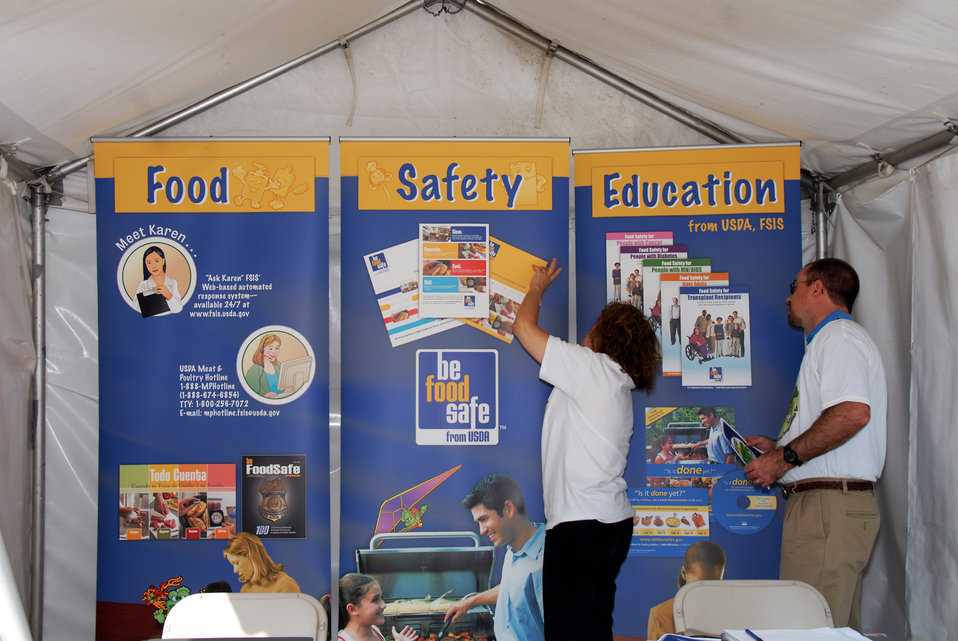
U.S. Department of Agriculture's (USDA) Food Safety and Inspection Service (FSIS) annually hosts a food safety camp that provides children with hands-on instruction about the dangers of foodborne illness and how to prevent it. This Food Safety camp was held at the USDA Beltsville, Maryland facility on May 23, 2007. Activities ranged from hand washing demonstrations with glow-in-the-dark materials to allowing children to study bacteria that can contaminate foods through a high-powered microscope.